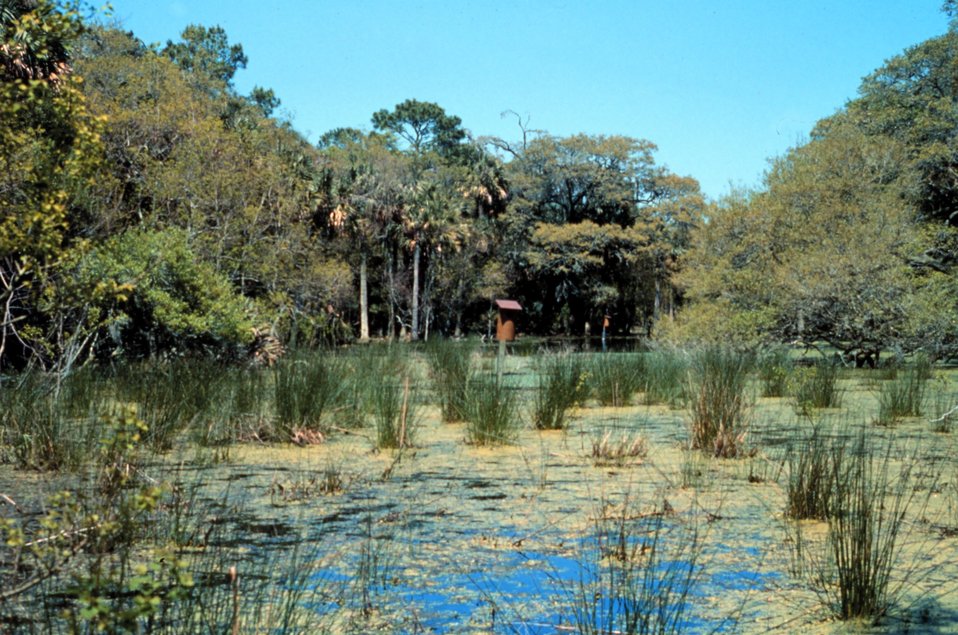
ACE Basin National Estuarine Research Reserve. Interior wetlands on Ace Basin island.